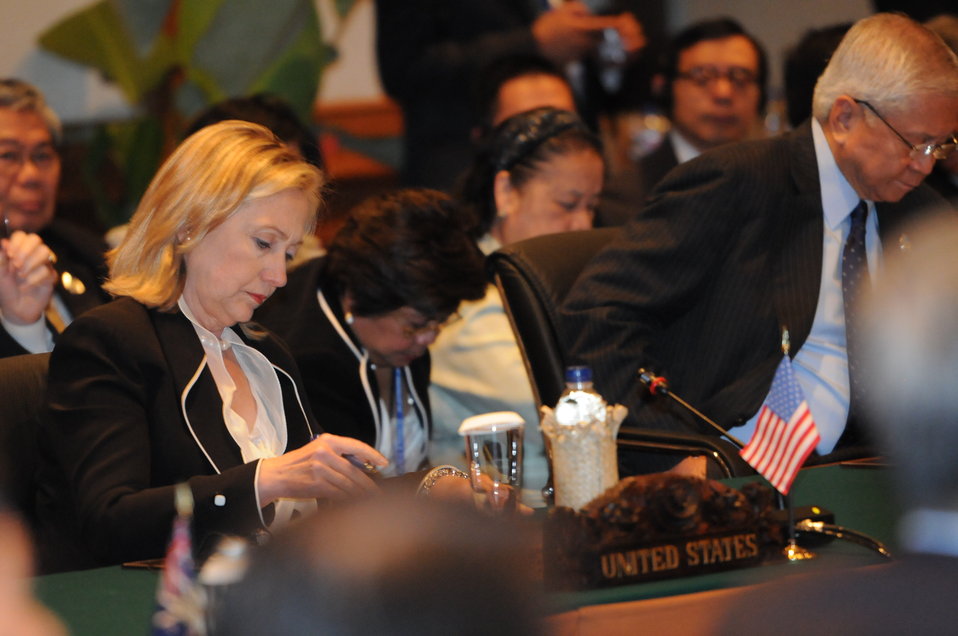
Secretary Clinton Participates in the East Asia Summit Foreign Ministers’ Consultation

U.S. Secretary of State Hillary Rodham Clinton participates in the East Asia Summit Foreign Ministers’ Consultation in Bali, Indonesia, on July 22, 2011.